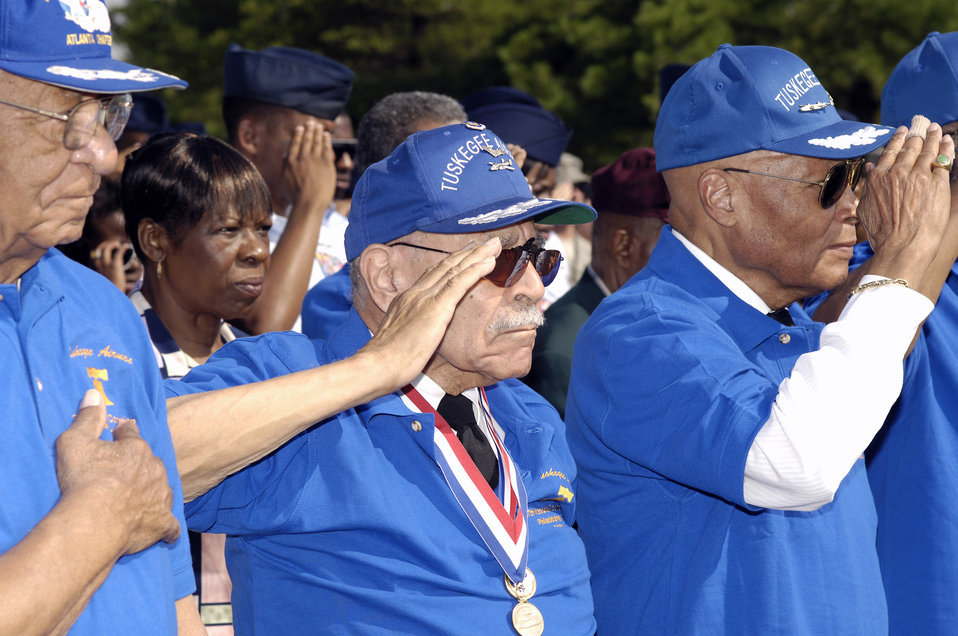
McGuire honors Tuskegee Airmen

Several Tuskegee Airmen salute during the National Anthem at the McGuire Air Force Base rededication of Tuskegee Avenue July 17. The ceremony was part of the 37th Tuskegee Airmen National Convention ending July 20 in Philadelphia.